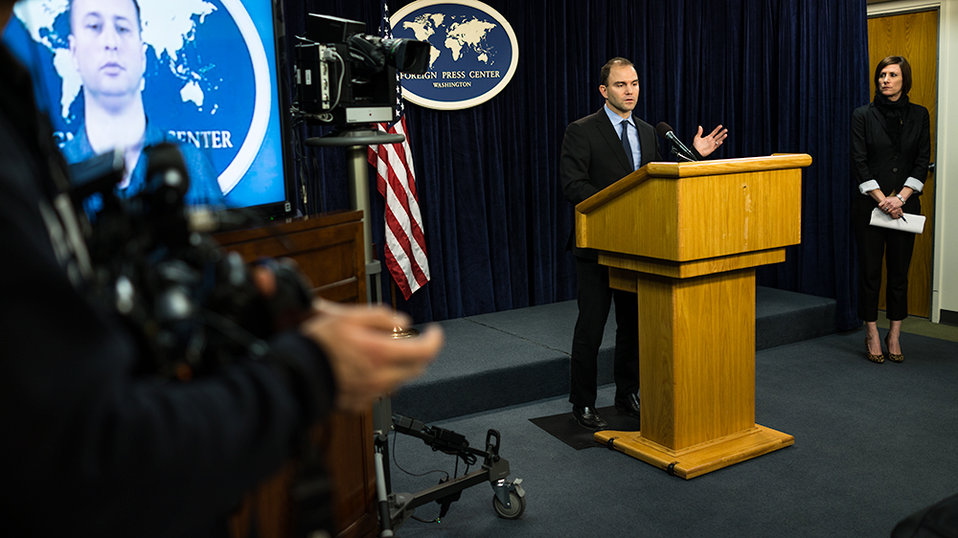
Deputy National Security Advisor Rhodes Addresses Reporters

Deputy National Security Advisor Ben Rhodes addresses journalists on the 2014 foreign policy priorities of Obama Administration at the Foreign Press Center in Washington, D.C., on January 29, 2014.